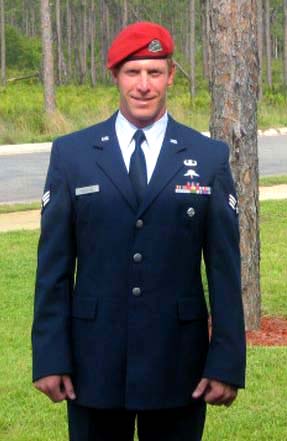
Ceremony honors combat controller killed in Afghanistan

Senior Airman Adam Servais was a combat controller assigned to the 23rd Special Tactics Squadron at Hurlburt Field, Fla. He was killed Aug. 19 when his vehicle came under hostile fire in Afghanistan's Uruzgan Province.